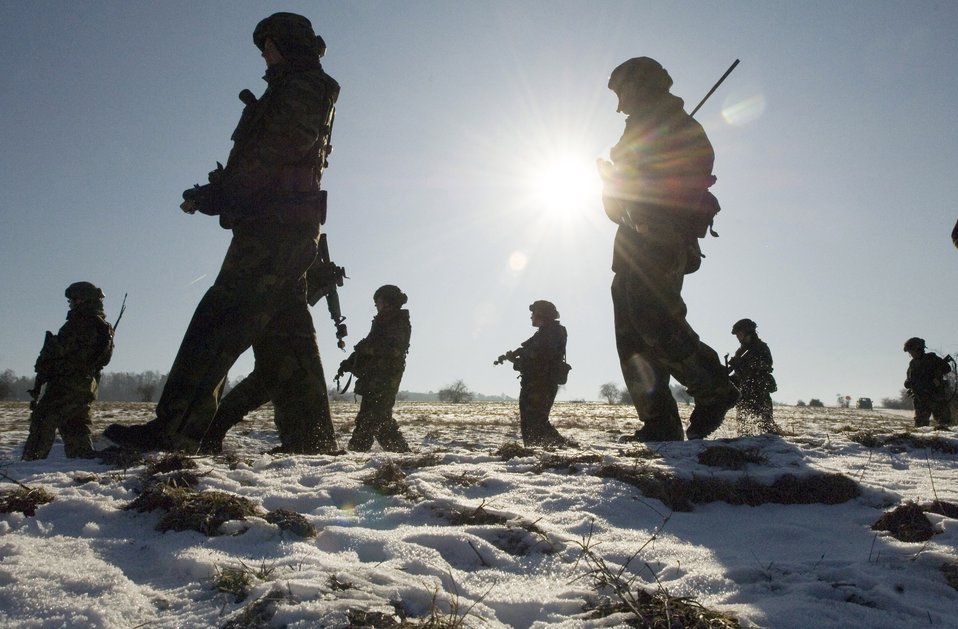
Squad patrol

BAUMHOLDER, Germany (AFPN) -- A security forces squad patrols a road for aggressors and is on the lookout for improvised explosive devices during training Feb. 2. The squad is from the 52nd Security Forces Squadron at Spangdahlem Air Base, Germany.